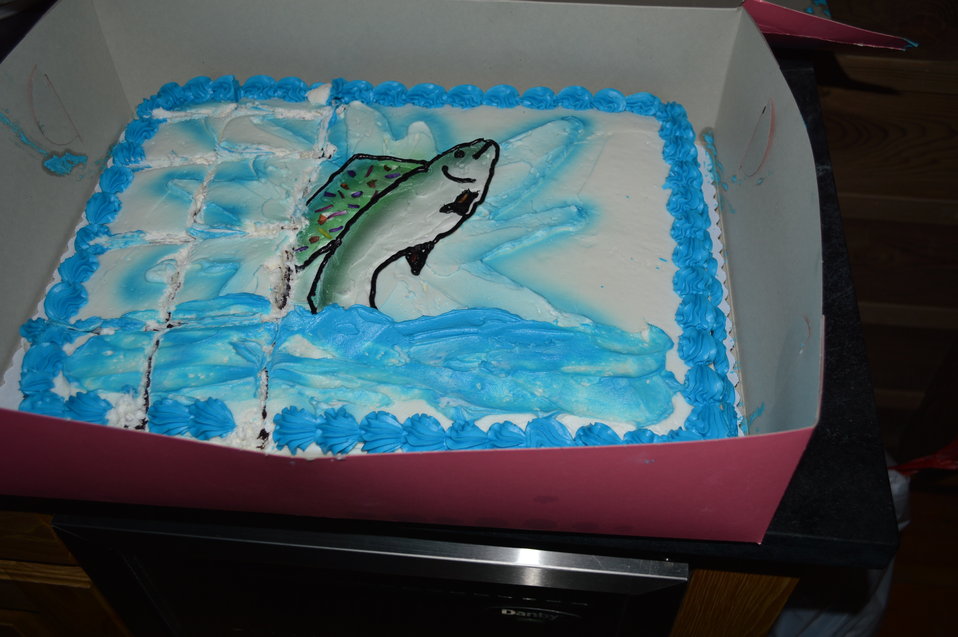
Regional Leadership Visit to Montana 2014